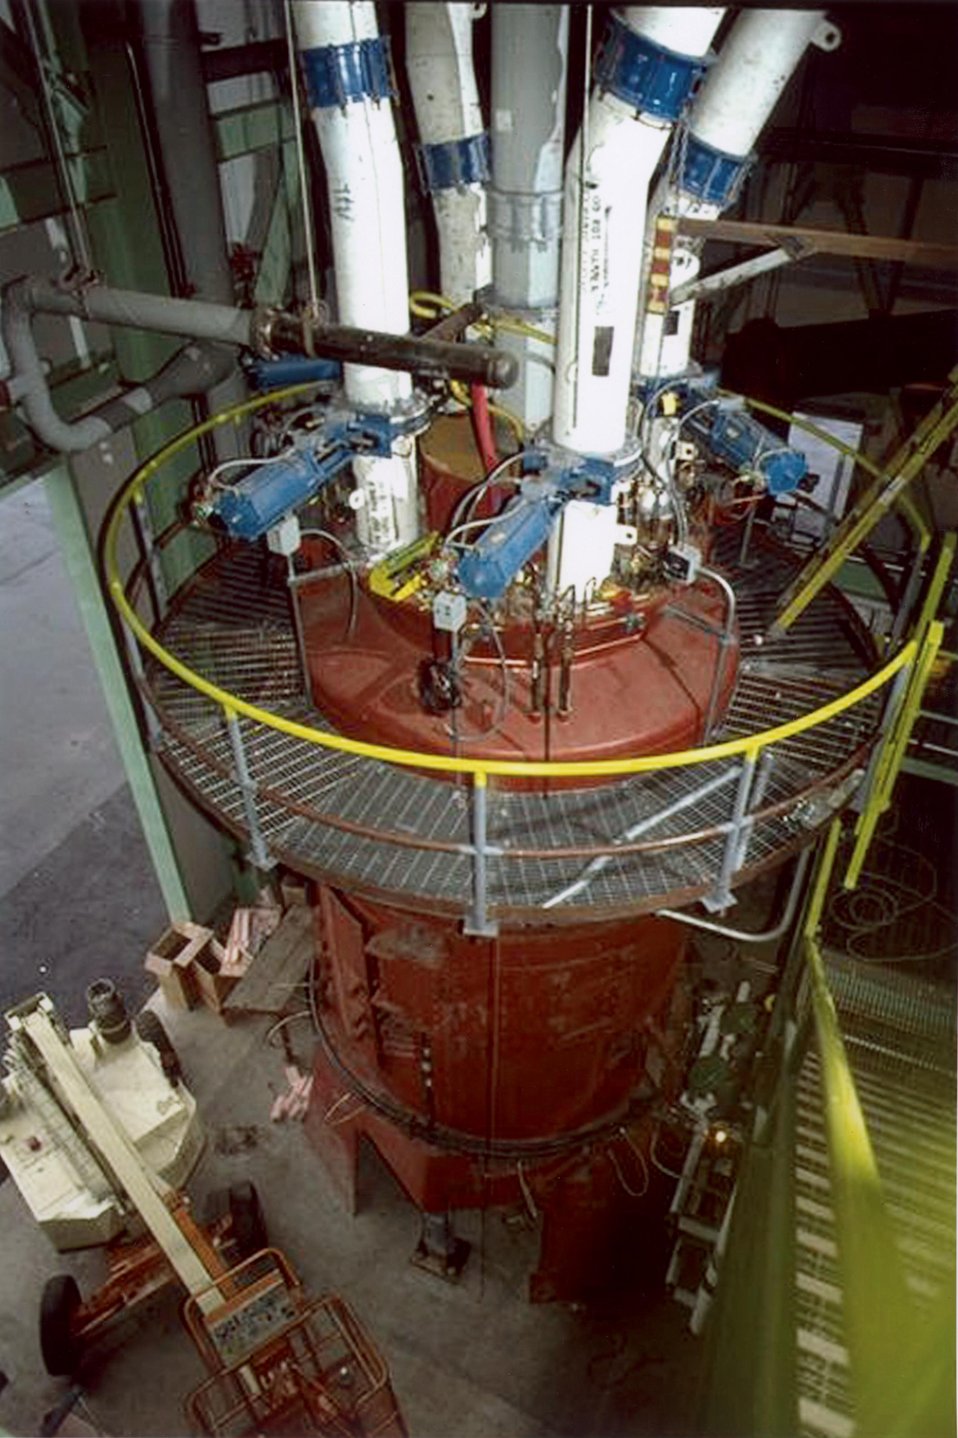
LOW NOX BURNER INSTALLATION BY TVA.